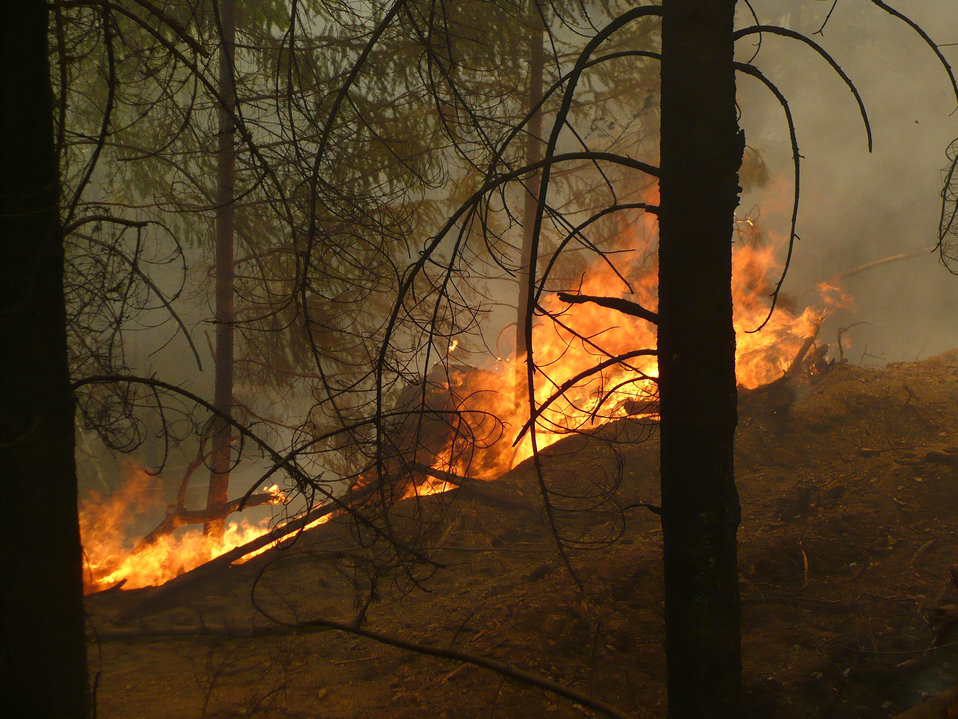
The Brimstone Fire near Merton, OR began on Jul. 26, 2013 began by lightning consumed 2,372 acres and is 100% contained.